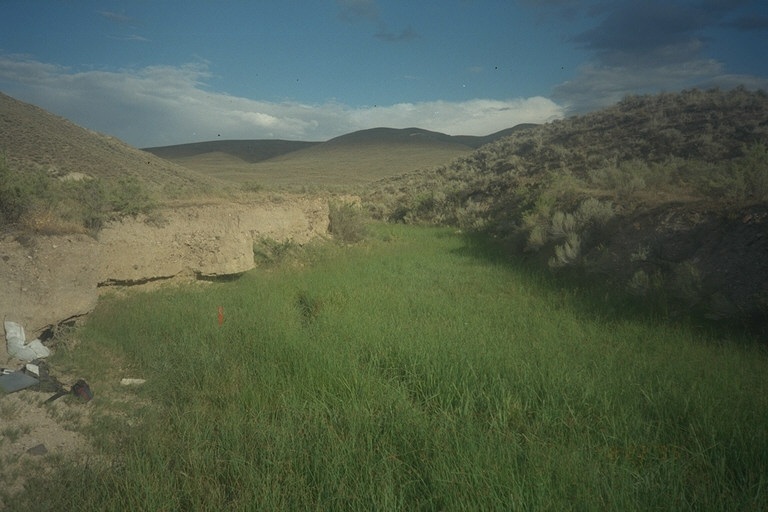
Riparian area Public Lands Salmon Field Office UCSC Upper Columbia Salmon Clearwater District